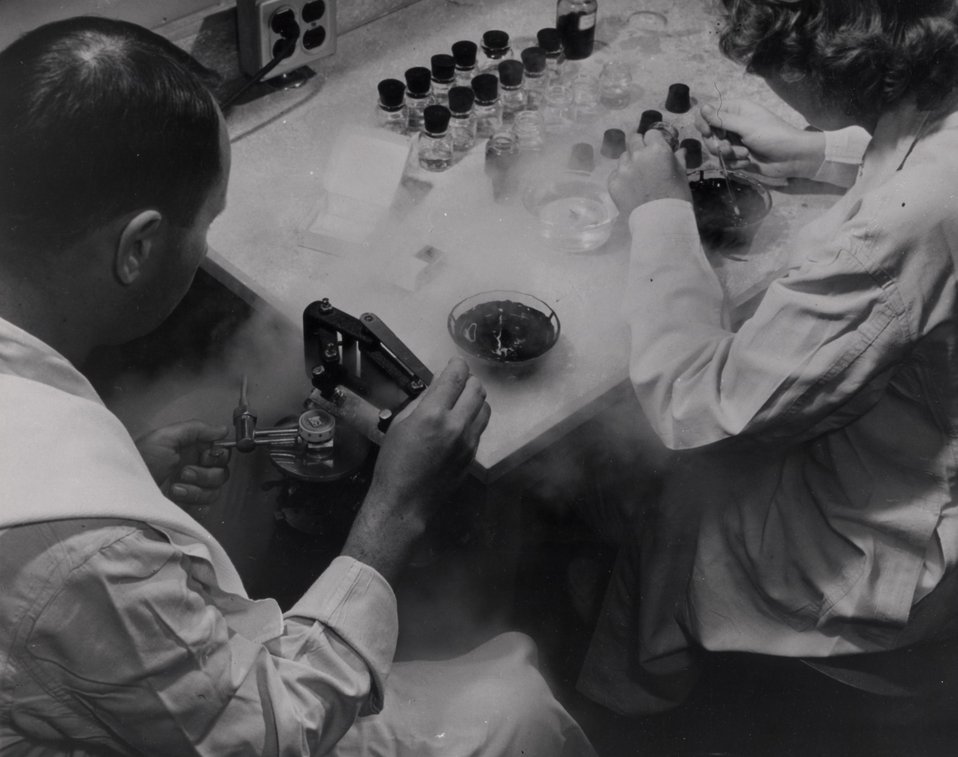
Standard equipment in many pathology laboratories includes a freezing microtome, such as this one. c. 1954